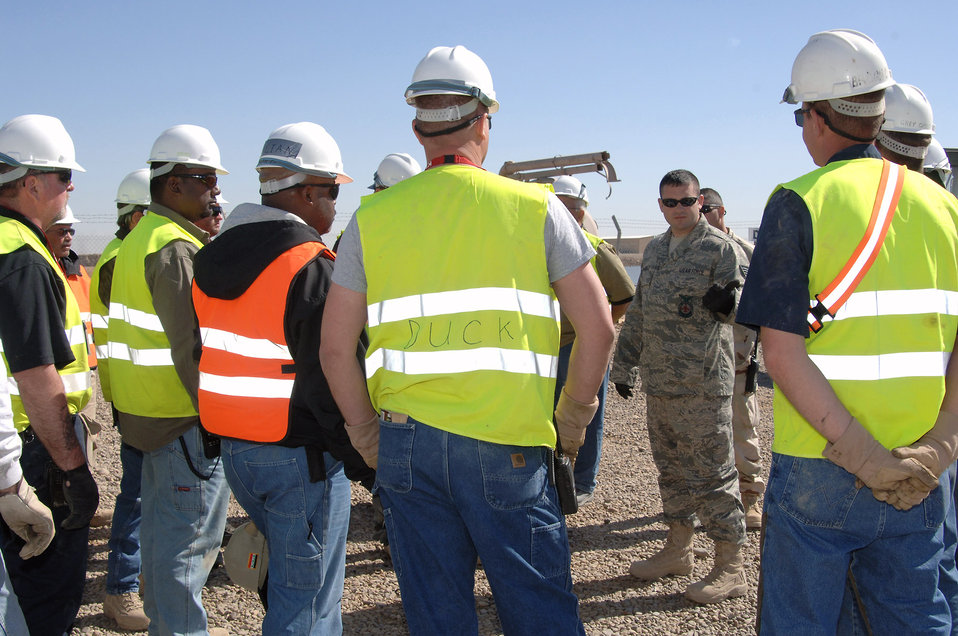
Balad Airmen teach contractors lifesaving skills

Tech. Sgt. Christopher McArdle leads a training session on using hydraulic Jaws of Life-type power tools March 5 at Balad Air Base, Iraq. The class, a first for the Balad AB fire department, marked an important step for U.S. government contractors working for KBR Theater Transportation Mission Recovery to train jointly with the Air Force. The TTM Recovery personnel are responsible for retrieving stuck, broken down and destroyed military vehicles throughout Iraq. Sergeant McArdle is a 332nd Expeditionary Civil Engineer Squadron Fire Department firefighter.